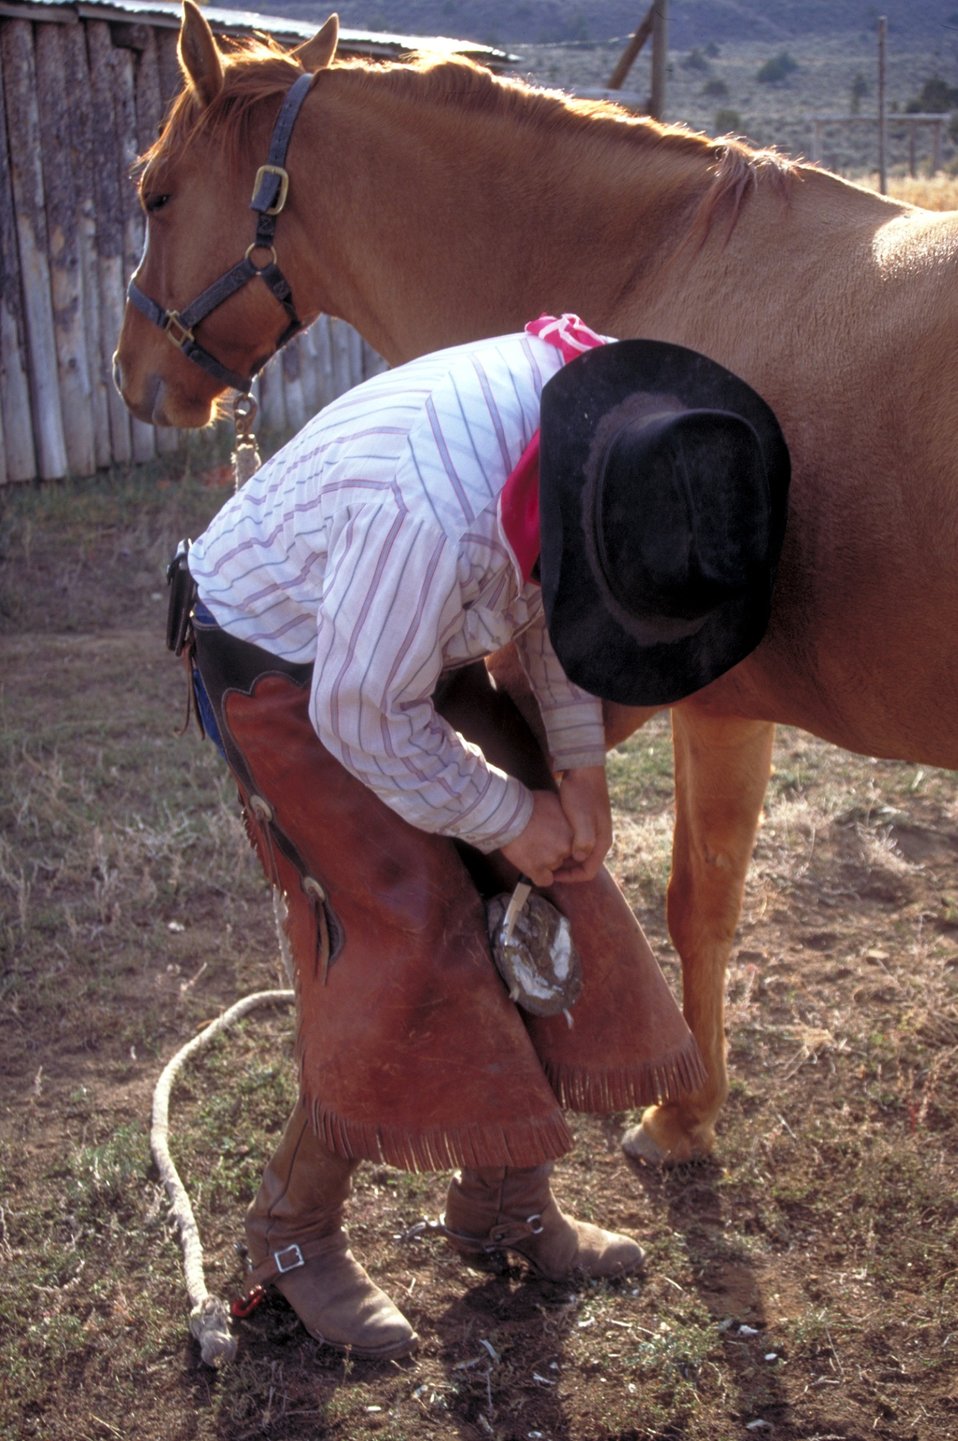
Working cowboys living near Vernal, Utah.